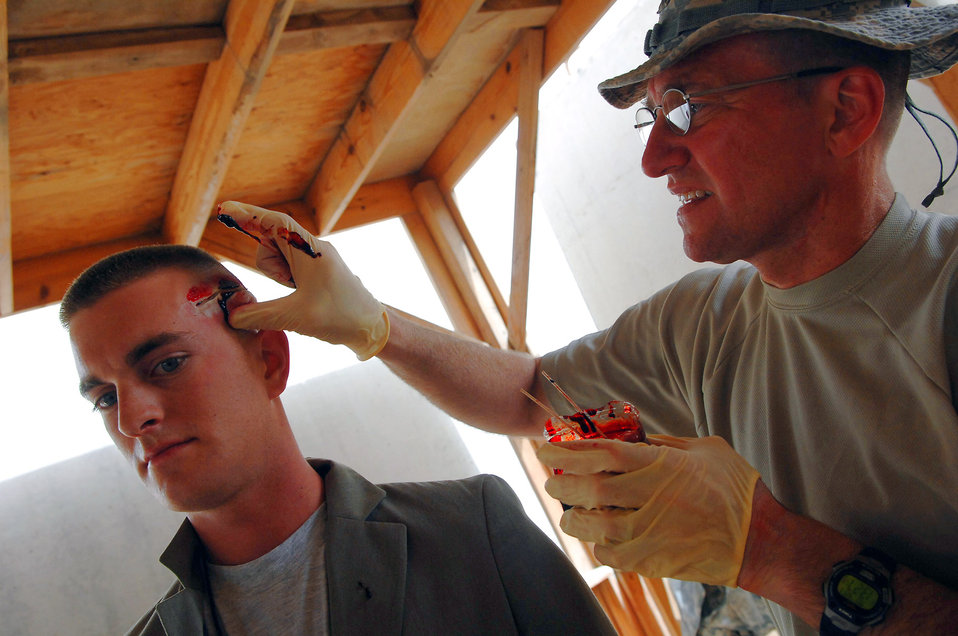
That looks like it hurts

Army Sgt. Robert Stallings places moulage on Staff Sgt. Patrick Hogan to simulate a major head injury March 31 at Balad Air Base, Iraq. Role-playing Airmen and Soldiers were given injury cards listing battlefield injuries and the medical staff from the Jamison Medical Training Facility created the wounds. Sergeant Stallings is deployed from the 402nd Forward Surgical Team at Hanscom Air Force Base, Mass. Sergeant Hogan is a 332nd Expeditionary Security Forces Squadron supply manager deployed from Spangdahlem Air Base, Germany.